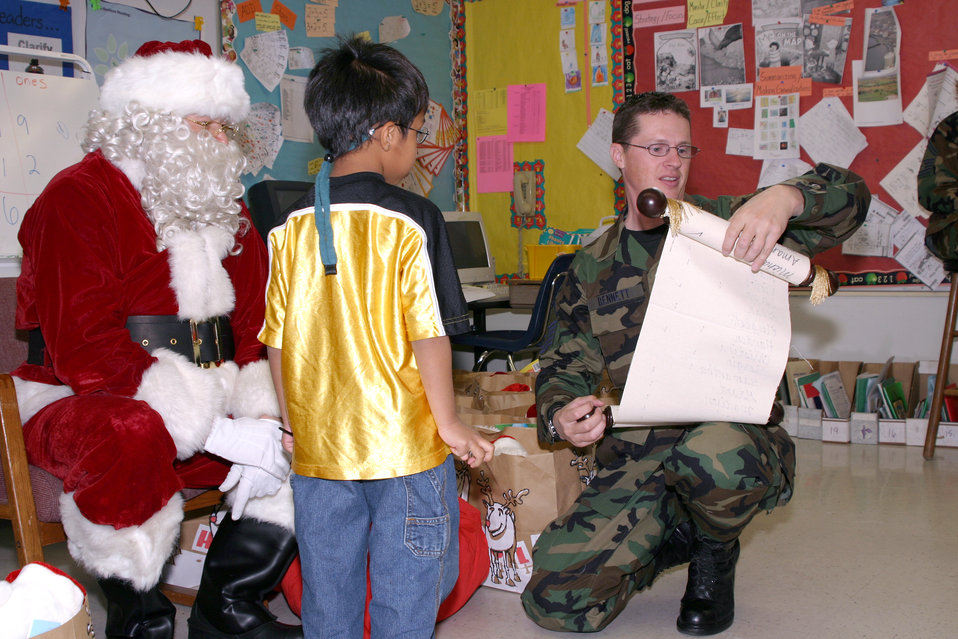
Operation Teddy Bear

FAIRFIELD, Calif. -- Master Sgt. Keith Bennett checks Santa's list of good boys and girls before giving a teddy bear to a student from Bransford Elementary School. Sergeant Bennett is a flightline expediter with the 749th Aircraft Maintenance Squadron.